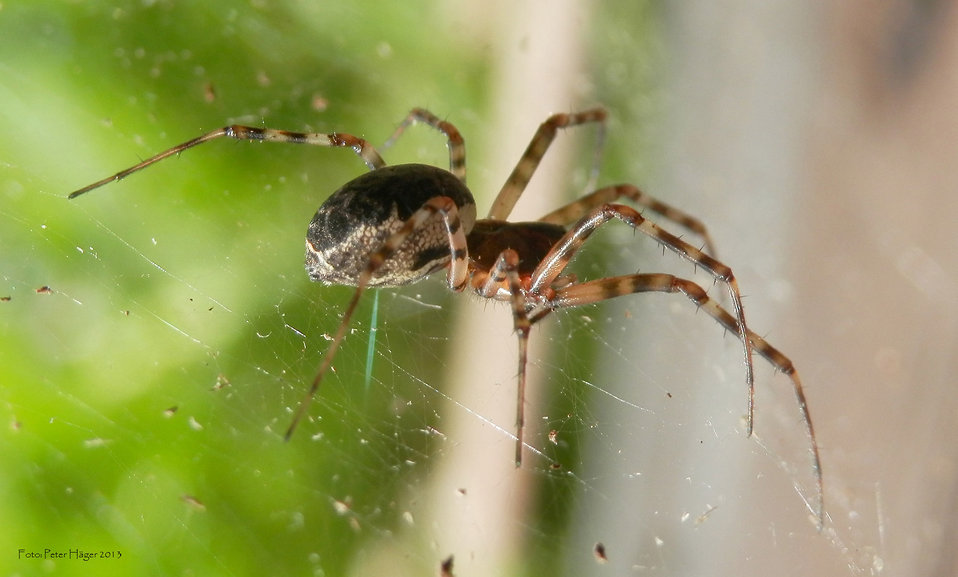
Spider

A spider into his cobweb.